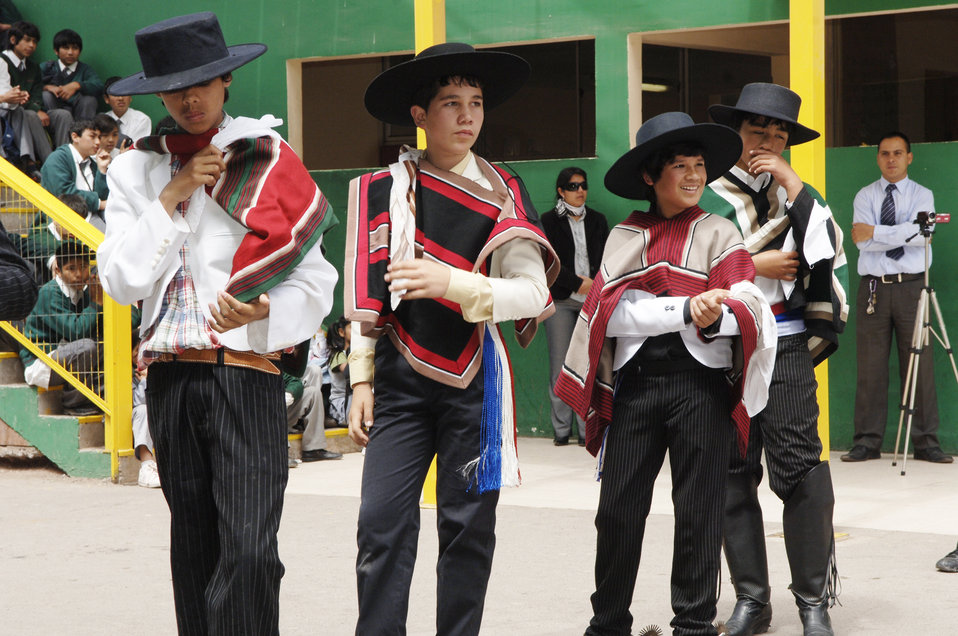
U.S., Chilean airmen visit school

Students of Colegio Macaya prepare for a traditional dance recital as part of a welcoming ceremony for visiting U.S. and Chilean air force airmen Oct. 27, 2009, in Alto Hospicia, Chile.